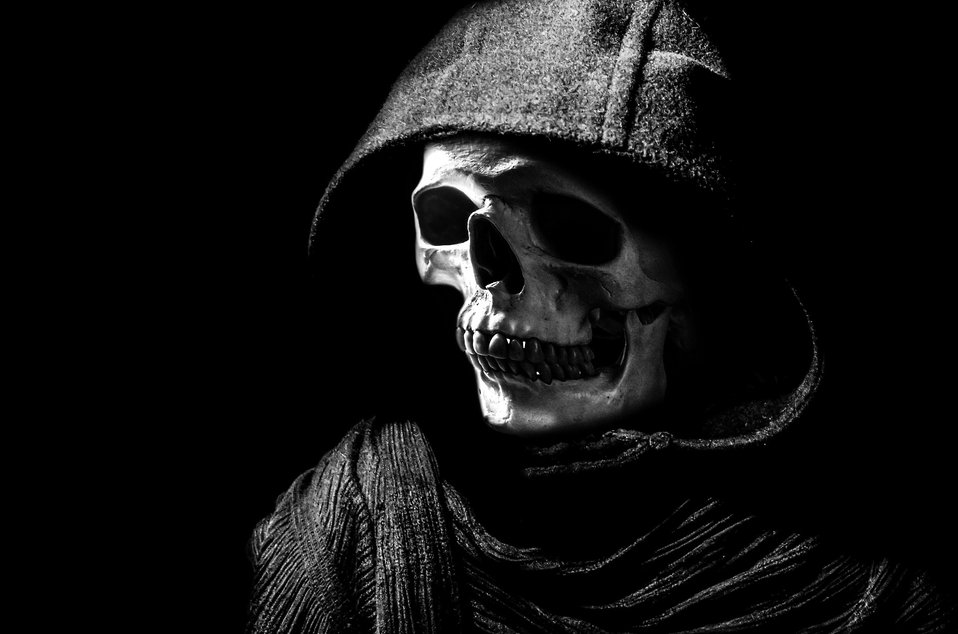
Skull and hood.